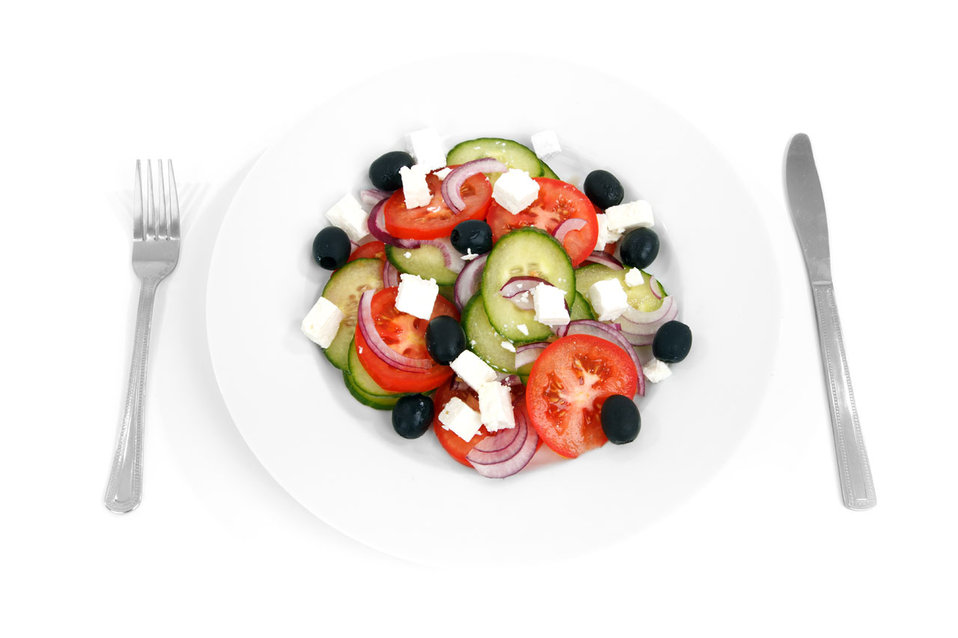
Greek salad on white plate with fork and knife isolated on white background.